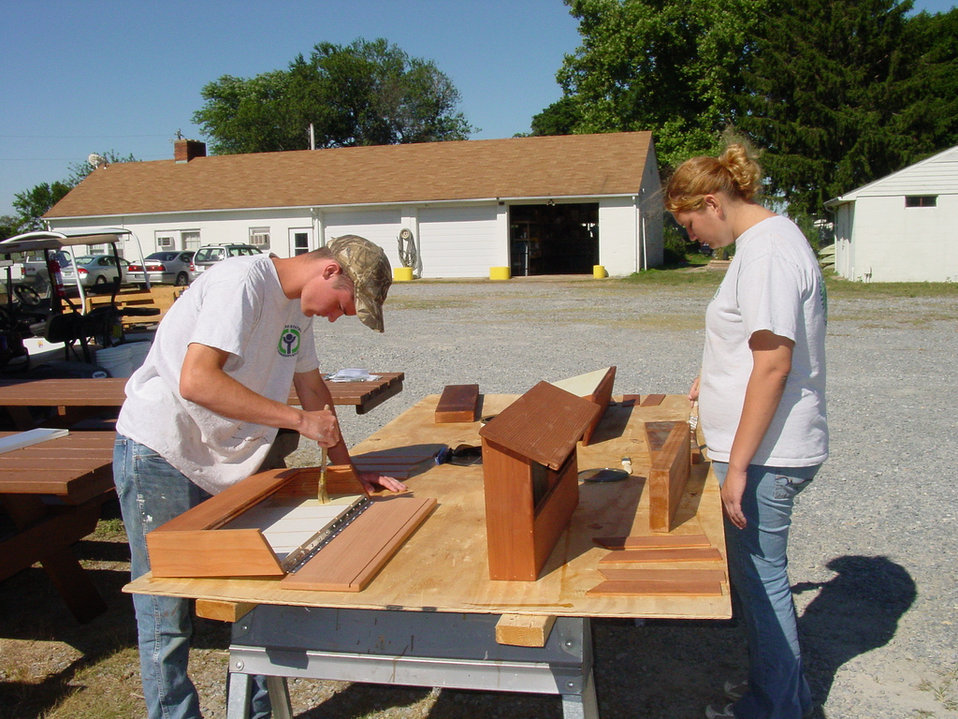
Constructing a kiosk

U.S. Fish and Wildlife Service